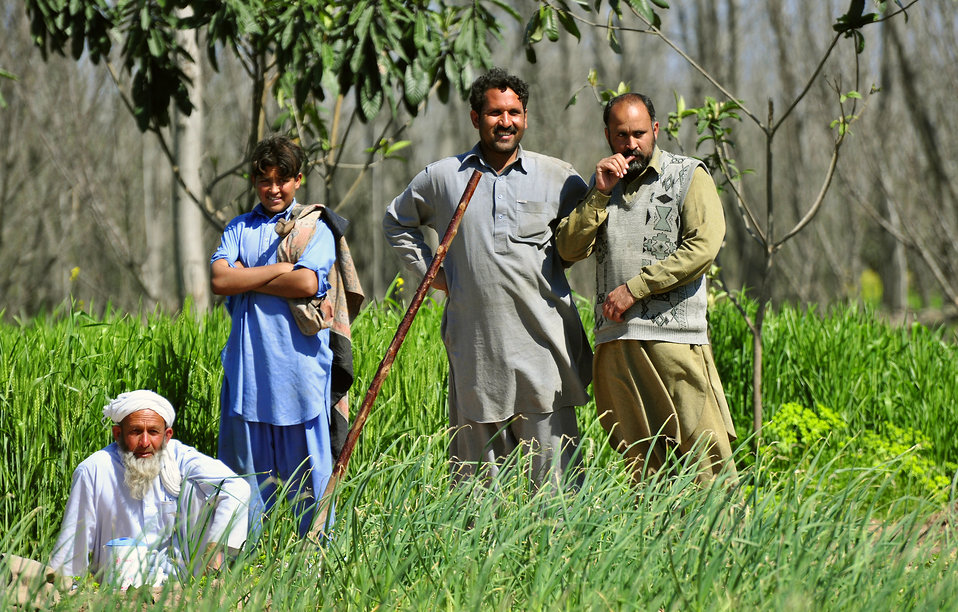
2011 March: USAID's Agricultural Recovery Program in 22 districts of Khyber Pakhtunkhwa, Punjab and Balochistan is an excellent example of the impact US development assistance can have. We have helped more than 500,000 farmers salvage the winter planting season and livestock after the floods. As a result, wheat farmers have nearly doubled their harvests. More than 5 million people have benefited. These photos show progress of the USAID Agricultural Recovery Project in Khyber Pakhtunkhwa.